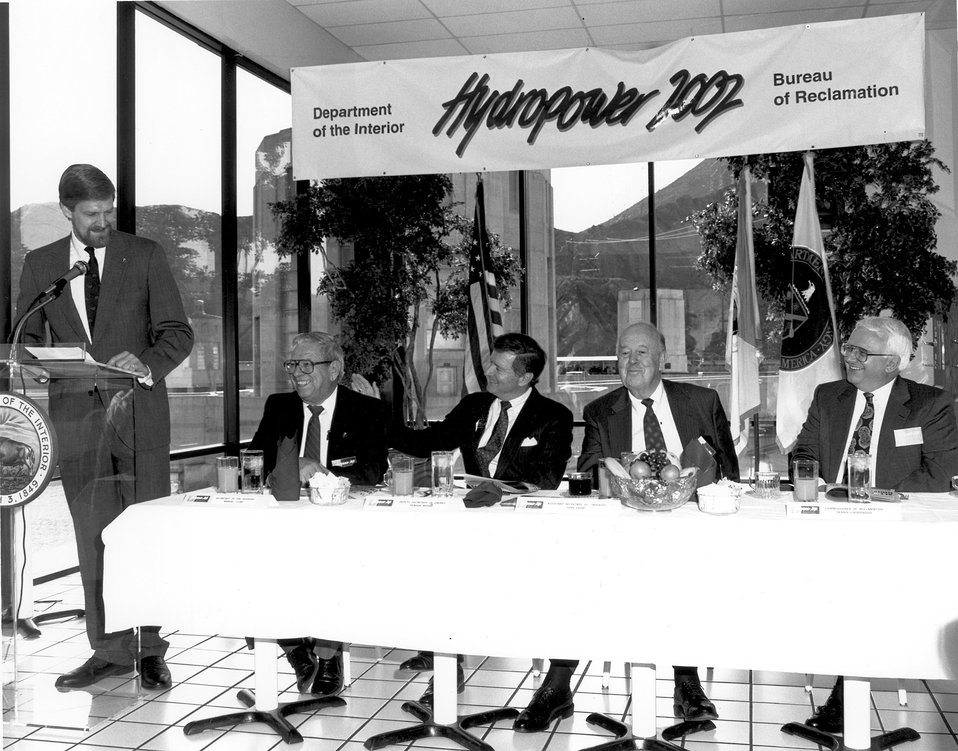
Boulder City Mayor Eric Lundgard is shown at the podium during the Hydropower 2002 Ceremony. c. 1992